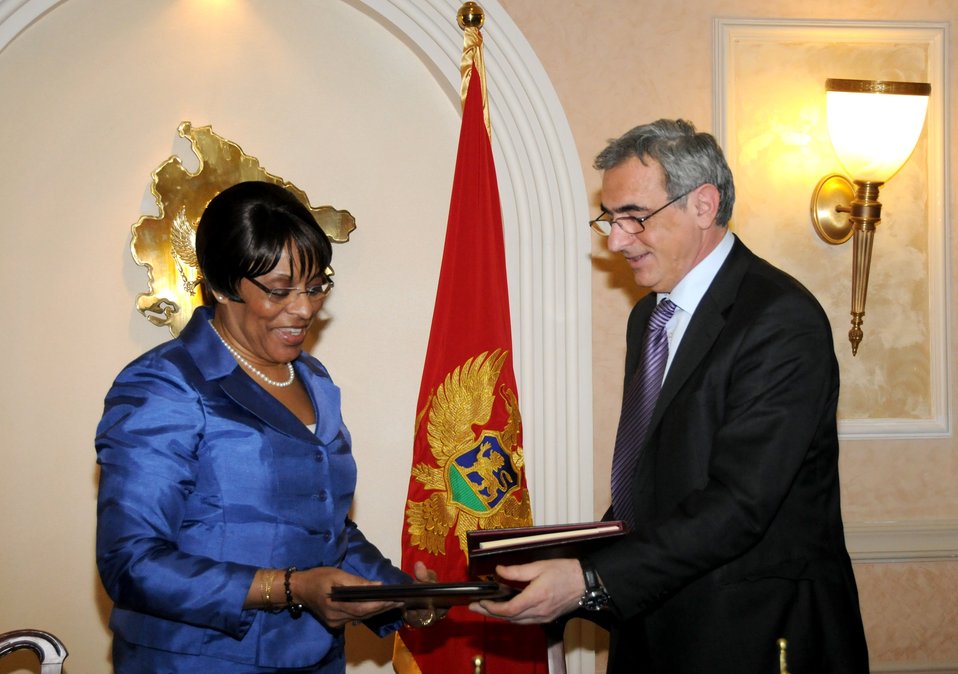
Ambassador Brown and Montenegro Minister Lompar Sign the U.S.-Montenegro Open Skies Agreement

U.S. Ambassador to Montenegro Sue K. Brown and Montenegro’s Minister of Transportation and Maritime Affairs Andrija Lompar sign the U.S.-Montenegro Open Skies Agreement in Podgorica, Montenegro, on March 2, 2012.